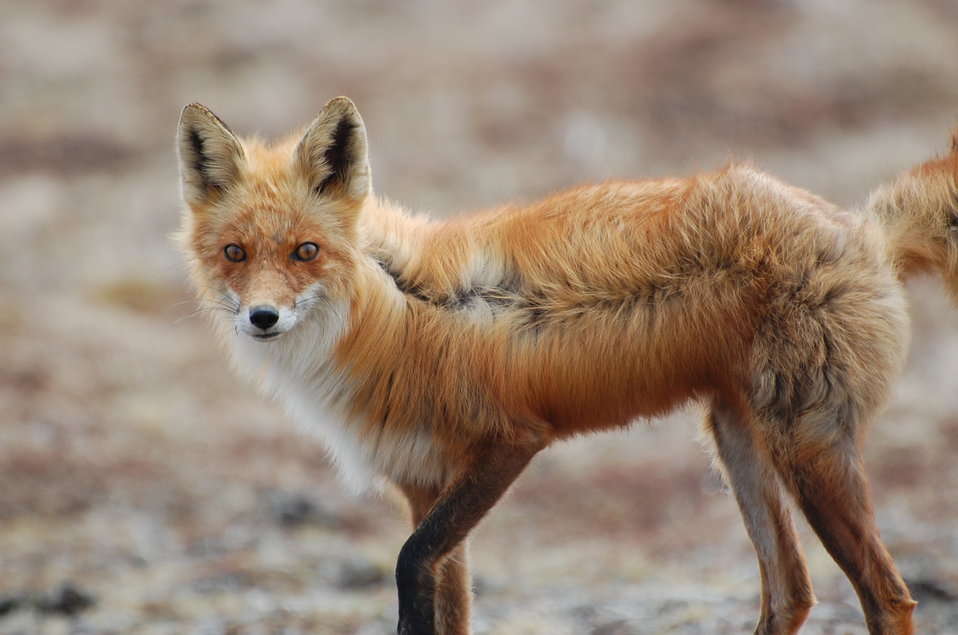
Red Fox

near Kinzarof Lagoon, Izembek National Wildlife Refuge